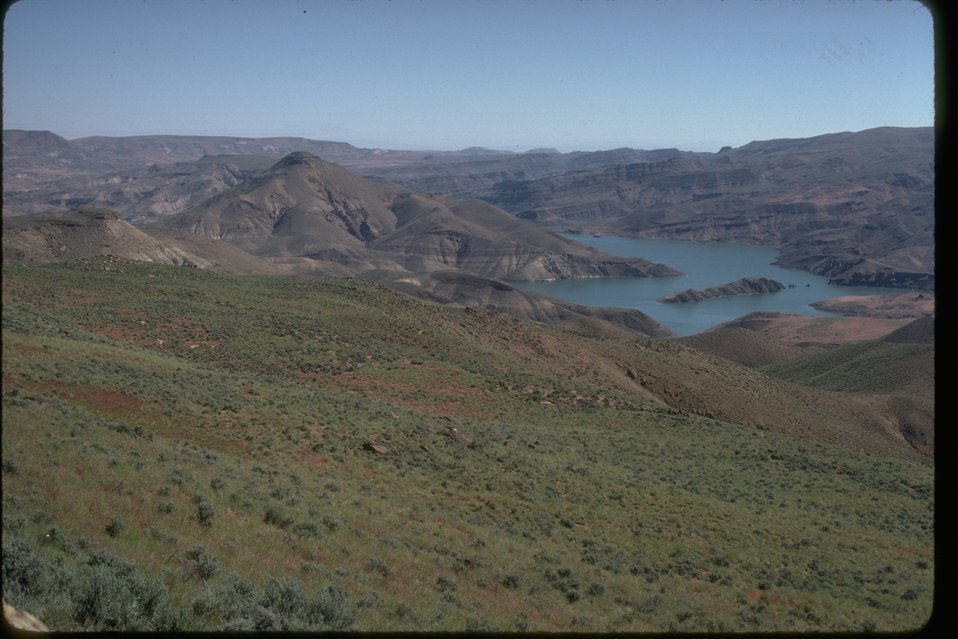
Aerial view of the Dry Creek Buttes with a reservoir in the background. OR 3-56